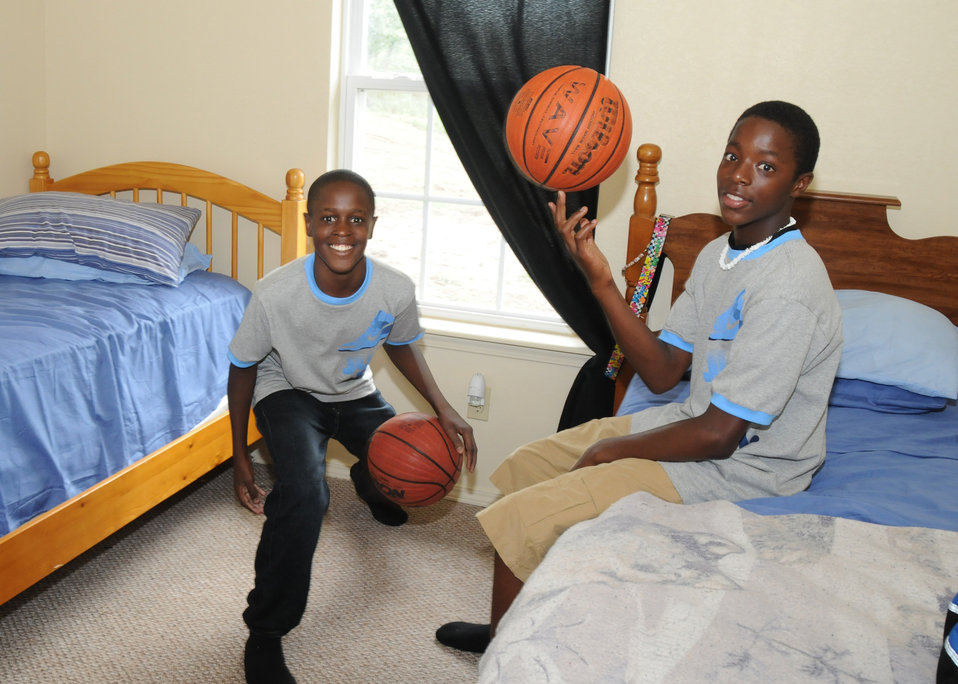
Knighe Rhoder and Mark Carter in their new bedroom in Fort Coffee, Oklahoma.